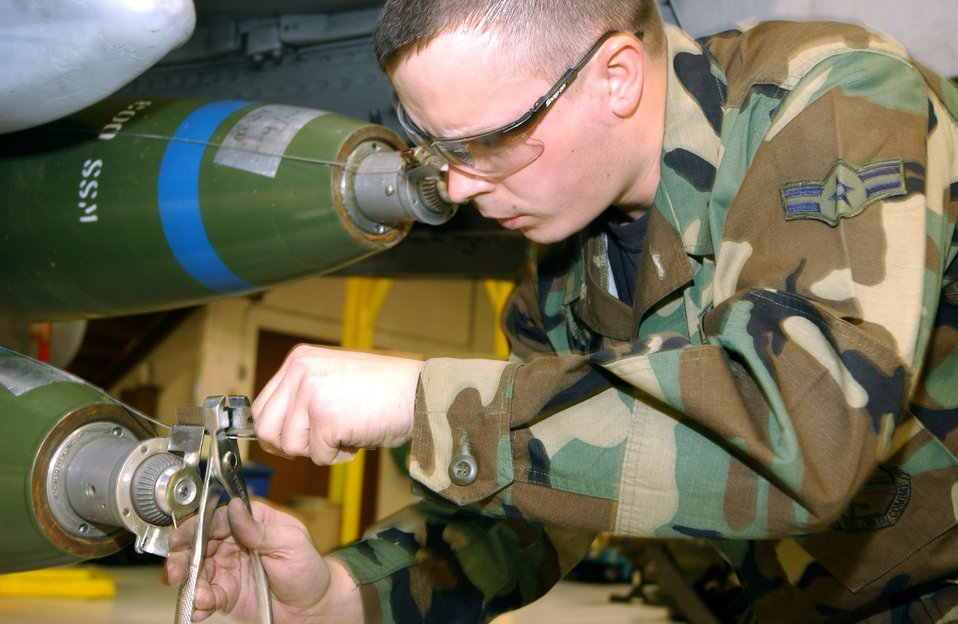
Bomb's away

EIELSON AIR FORCE, Alaska (AFPN) -- Airman 1st Class Justin Martin cuts landers wire to an MK-82 bomb during a quarterly load crew competition here. Each team of F-16 Fighting Falcon and A-10 Thunderbolt II weapon loaders is evaluated in timeliness and accuracy of loading munitions. Airman Martin is a weapons loader assigned to the 354th Aircraft Maintenance Squadron.